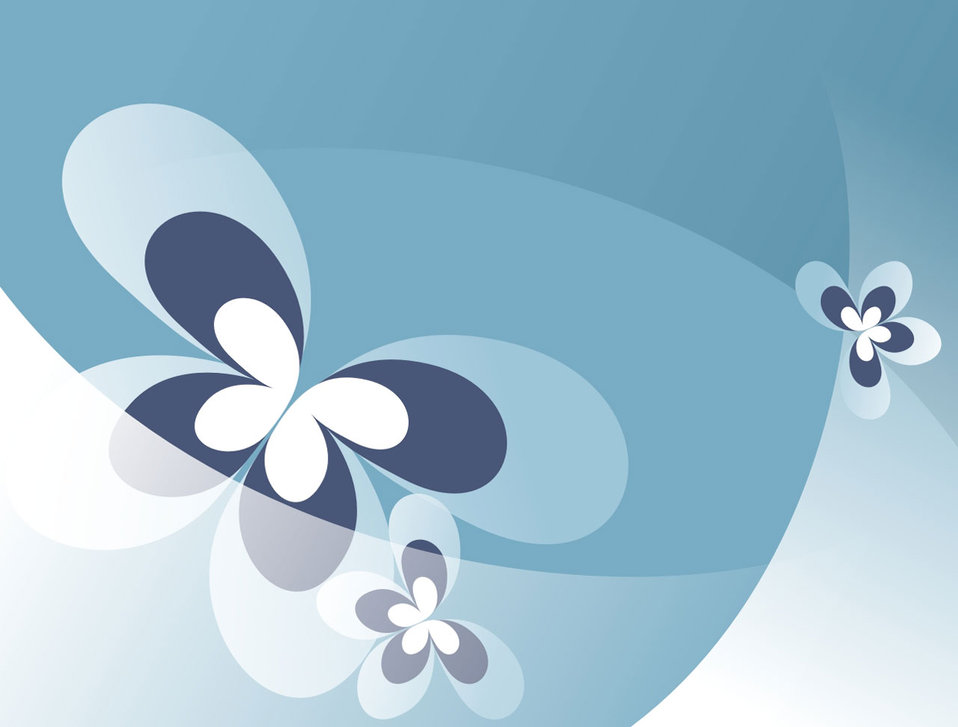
Blue butterfly background

Blue butterflies on a blue background.